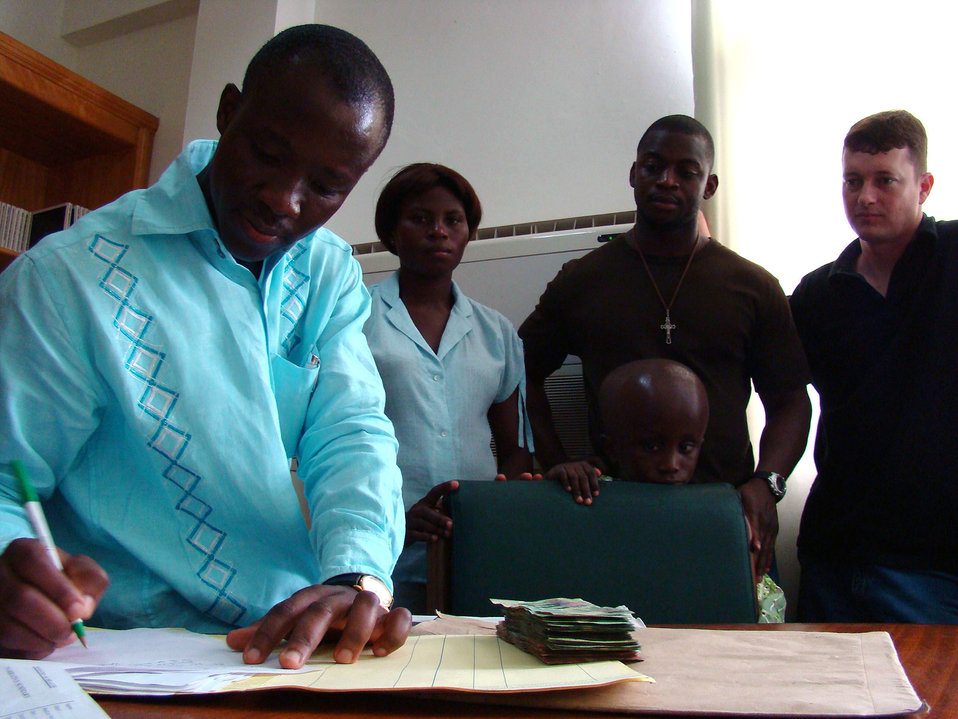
Airman helps save boy in Africa

Dr. Pat Bankahat , documents Alex Vadis Teye's medical records Feb. 22 at the Korle Bu Teaching Hospital in Ghana, Africa. Alex, 9, visited the hospital to accept a donation from Armed Forces servicemembers in response to his parents' plea for help to pay for the boy's surgery. Alex suffers from hydrocephalus, a common birth defect which causes an excess of water in the brain. Dr. Bankahat is the head of neurosurgery at the hospital. Staff Sgt. Hodonou Motepke, a U.S. Air Force heating, ventilation and air conditioning technician, and native African, initiated a drive to raise the money to pay for Alex's surgery. This is Sergeant Motepke's first trip back to Africa in 10 years. The U.S. military presence in Ghana is in support of U.S. President George Bush's visits to the continent.